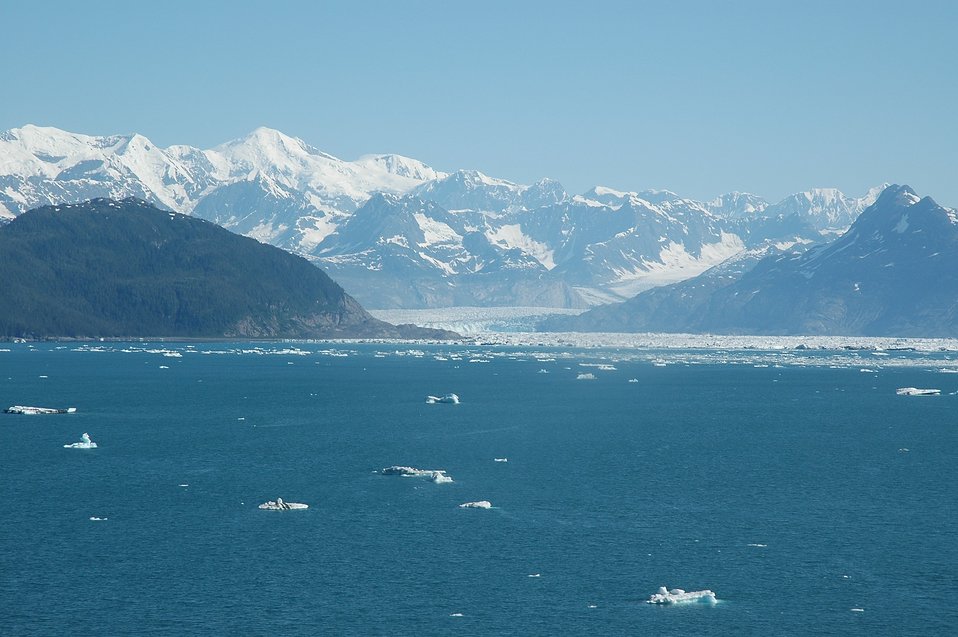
Columbia Glacier